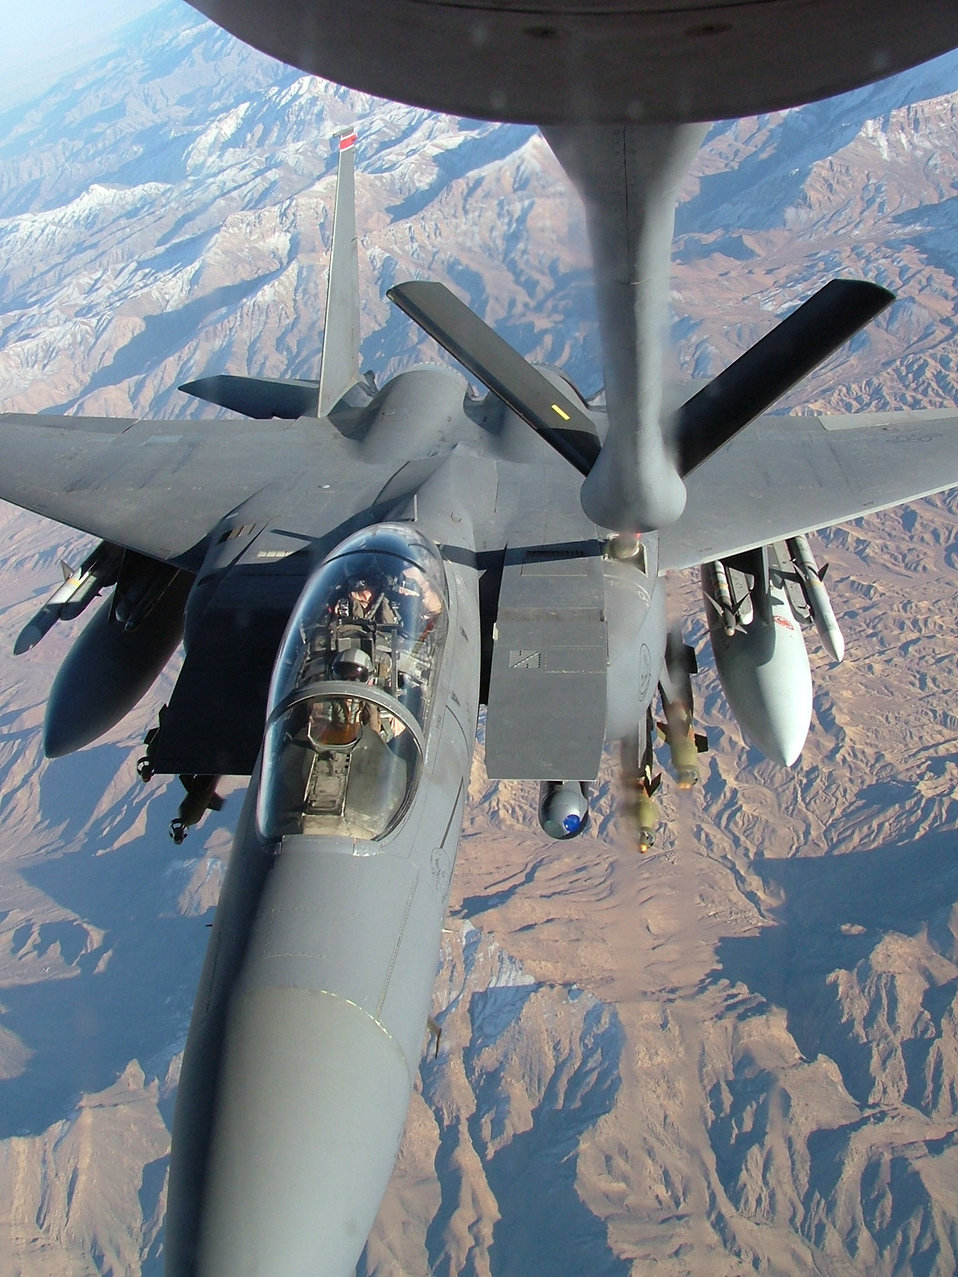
Keeping fuel flowing

MANAS AIR BASE, Kyrgyzstan -- A 22nd Expeditionary Air Refueling Squadron KC-135 Stratotanker refuels an F-15E Strike Eagle over Afghanistan.